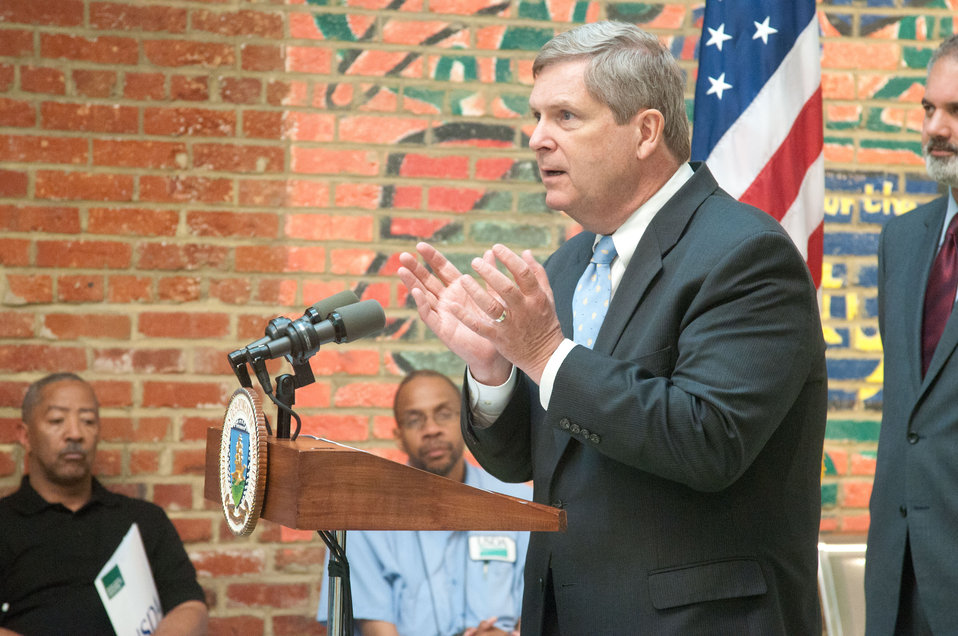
Agriculture Secretary Tom Vilsack announced at the Bread for the City that the U.S. Department of Agriculture is commited to ending childhood hunger on
friday, April 29, 20ll in Washington, DC. Secretary Vilsack presented USDA's resources to champion the end of hunger and create innovative partnerships to address hunger, especially among children. Vilsack announced that USDA has made available to individuals, groups and communities the tools and technical assistants to become champions themselves in ending childhood hunger. He shared the web address www.fns.usda.gov, where people can participate in an online commitment for that cause and identified actions that can be taken. When a person registers as a Stakeholder, they, their group or community can be kept informed and have input about ending childhood hunger. A follow-on link to www.serve.gov www.serve.gov can assist a person in finding volunteer opportunities in their area; register an unlisted program; share a story about a volunteer project or personal experience; and help get the word out about United We Serve.